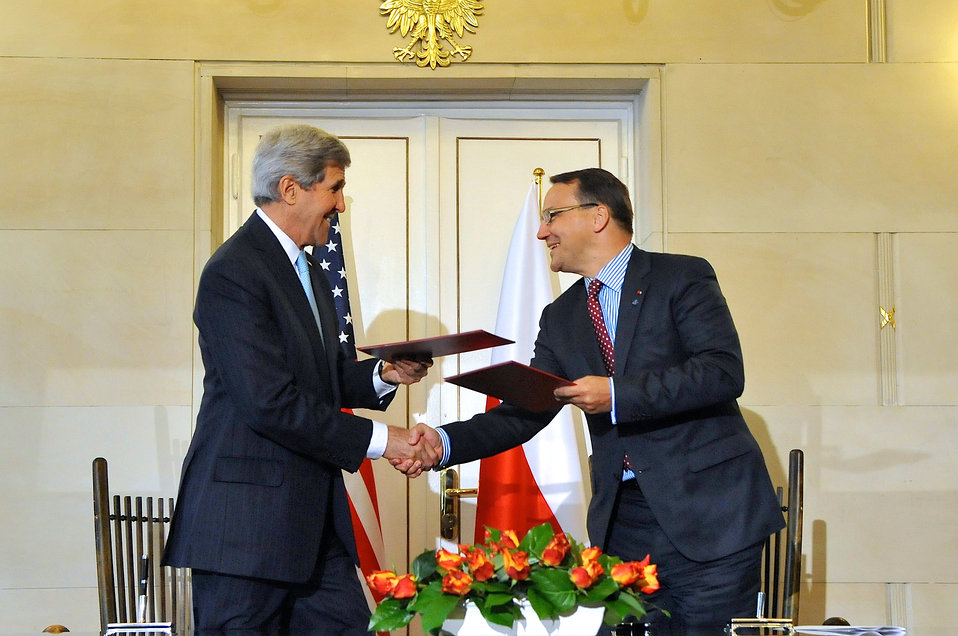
Secretary Kerry, Polish Foreign Minister Sikorski Exchange Copies After Signing Innovation Framework Agreement

U.S. Secretary of State John Kerry and Polish Foreign Minister Radislow Sikorski exchange copies after signing an Innovation Framework Agreement in advance of President Obama's visit to Warsaw on June 3, 2014.